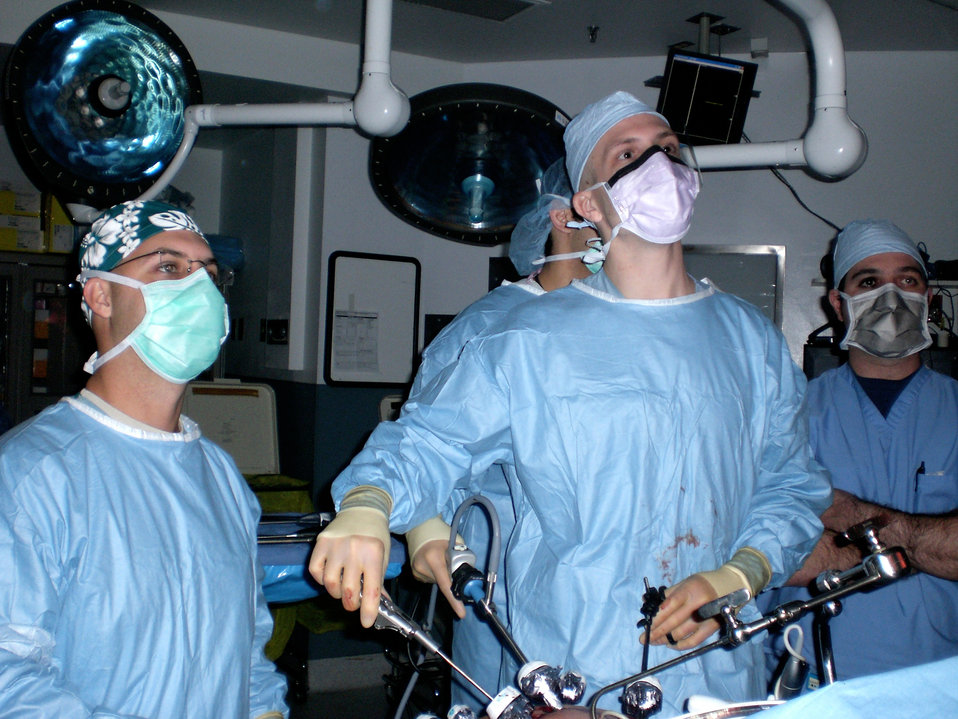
Agreement expands beneficiaries' access to bariatric surgery

Maj. (Dr.) Joshua Alley (center) and Maj. (Dr.) Richard Peterson (left) perform laparoscopic gastric bypass surgery at the Nix Hospital Dec. 15 in San Antonio. A resource sharing agreement, established in December 2008, allows doctors from Wilford Hall Medical Center from Lackland Air Force Base, Texas, to perform bariatric surgeries at the hospital in downtown San Antonio. Doctors Alley and Peterson are bariatric surgeons.